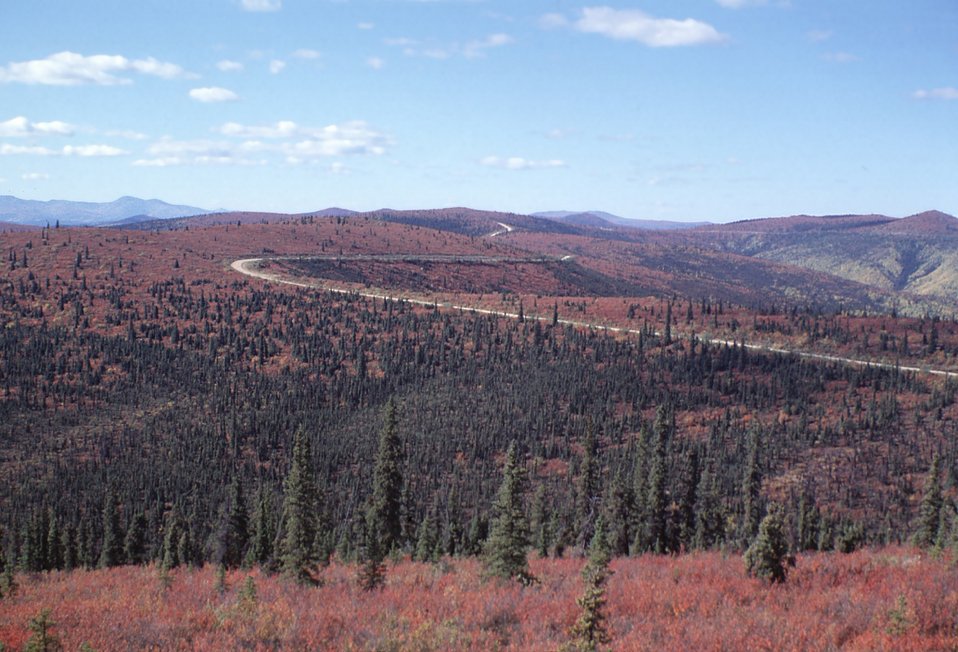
Fall colors along Taylor Highway, Alaska